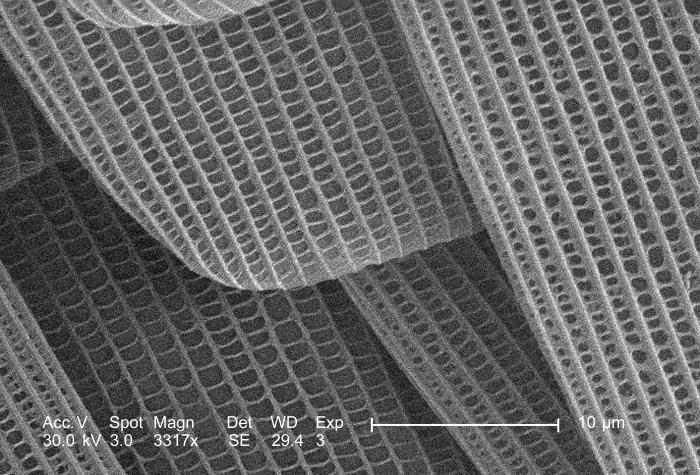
Under a high magnification of 3317x, this scanning electron micrograph (SEM) depicted the wondrous morphologic details found on the wing surface of an unidentified insect that was discovered on the grounds of the Decatur, Georgia suburbs. The scalar structures, though numerous, were very light, which adding very little to the wing's overall weight. These scales added colorful demarcating characteristics to the wings, distinguishing this specie from another, provided sexual differentiation, acted as thermoregulatory control mechanisms, thereby, insulating the insect on colder days, and dissipated excess heat on warmer days.